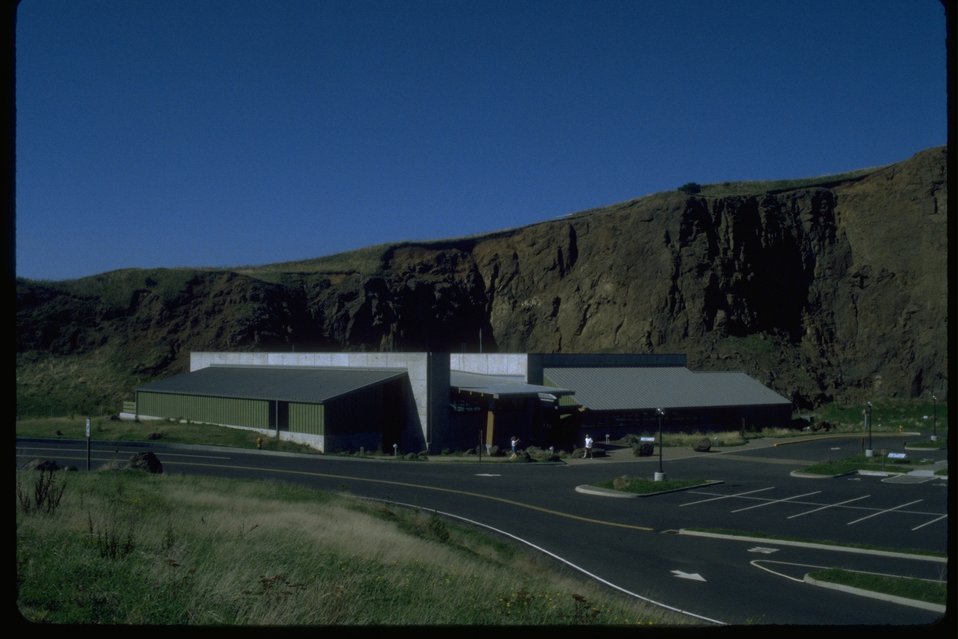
Interpretive Center at the Yaquina Head ONA.